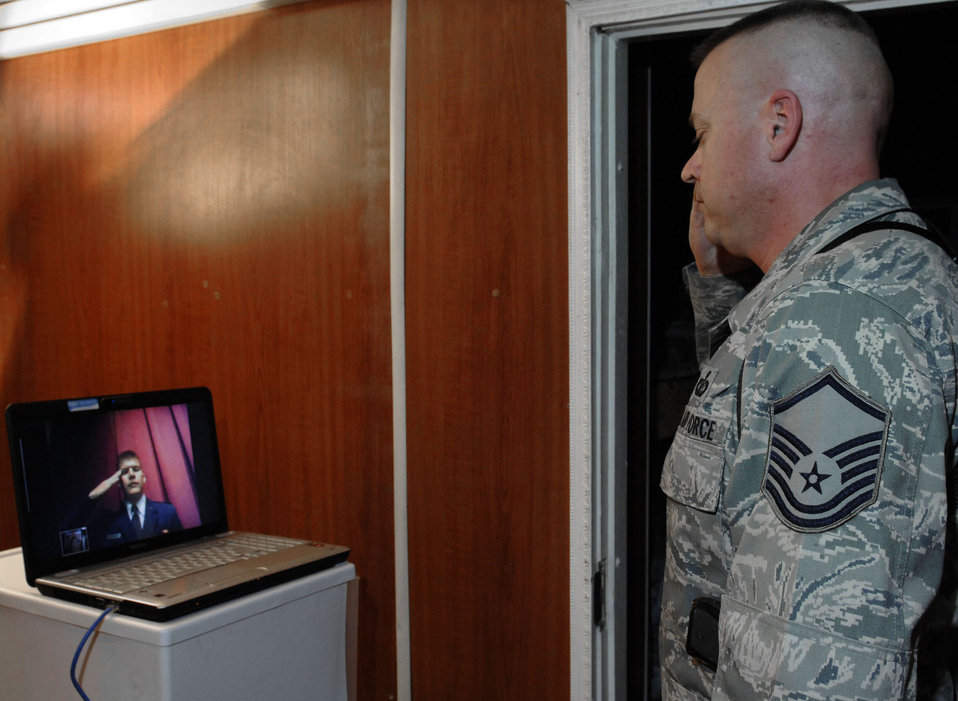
Satellite salute

Using a satellite hookup, Master Sgt. Roger Nelson renders the first salute to his brother, 2nd Lt. Bryon Kroger, Oct. 27, 2009, from Camp Eggers, Afghanistan, following Lieutenant Kroger's commissioning during the Officer Training School graduation at Maxwell Air Force Base, Ala. Sergeant Nelson is a budget analyst deployed from Shaw AFB, S.C. and calls Granite Falls, Minn., home. Lieutenant Kroger goes on to Goodfellow AFB, Texas, for intelligence school training and hails from Cherokee, Iowa.